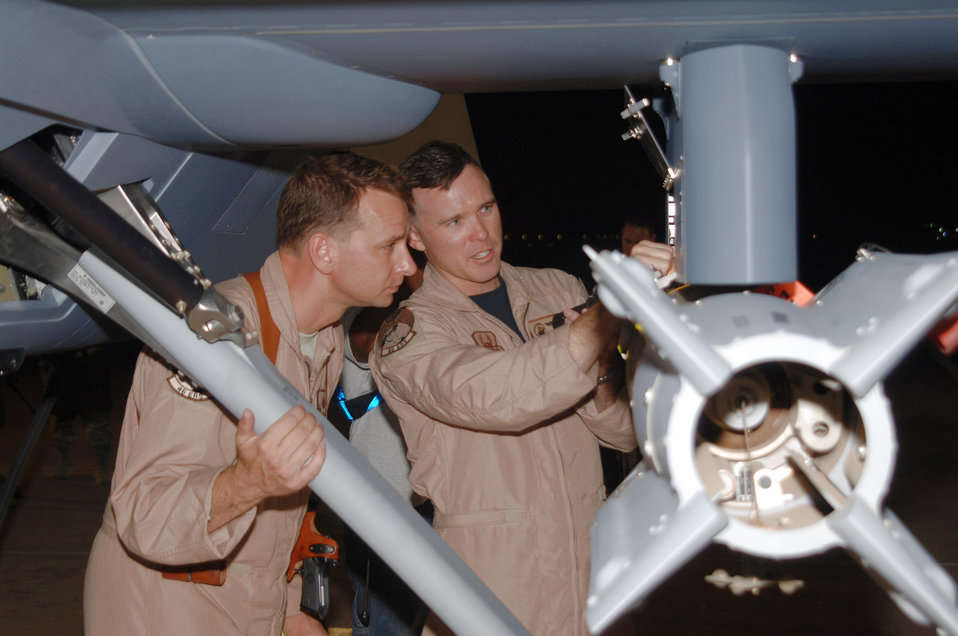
Reaper patrols Iraq sky

Maj. John Chesser (left) Lt. Col. Micah Morgan inspect the arming devices on a munition affixed to an MQ-9 Reaper July 17 at Joint Base Balad, Iraq. The Reaper can carry up to 3,750 pounds of munitions, including GBU-12 laser-guided bombs and Hellfire missiles. Colonel Morgan is the 46th Expeditionary Reconnaissance and Attack Squadron commander, and Major Chesser is a Reaper pilot with the 46th ERAS. Both officers are deployed from Creech Air Force Base, Nev.